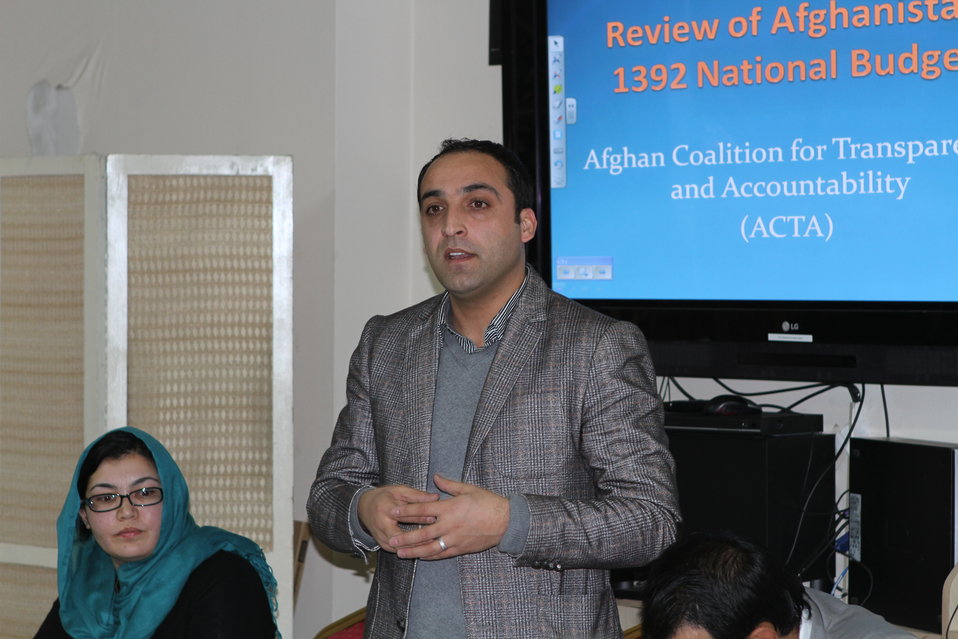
Presentation of the ACTA Civil Society analysis of the FY 1392 Afghan national budget